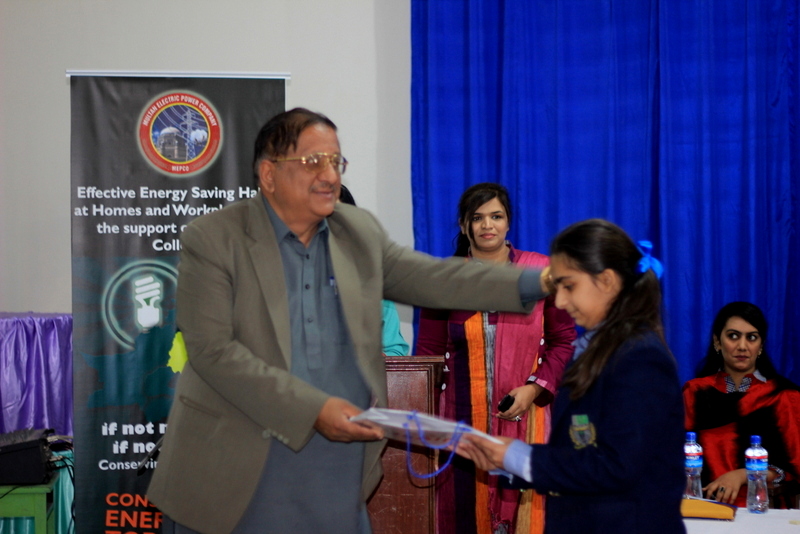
USAID Power Distribution Program-Energy Conservation Seminar at Multan Public School and Colleges for Girls, Multan.

During the seminar at Multan Public School & Colleges,Multan, Malik Saeed Ahmad(Senior Engineer,MEPCO), distributing the goody bag to the winner of quiz session.